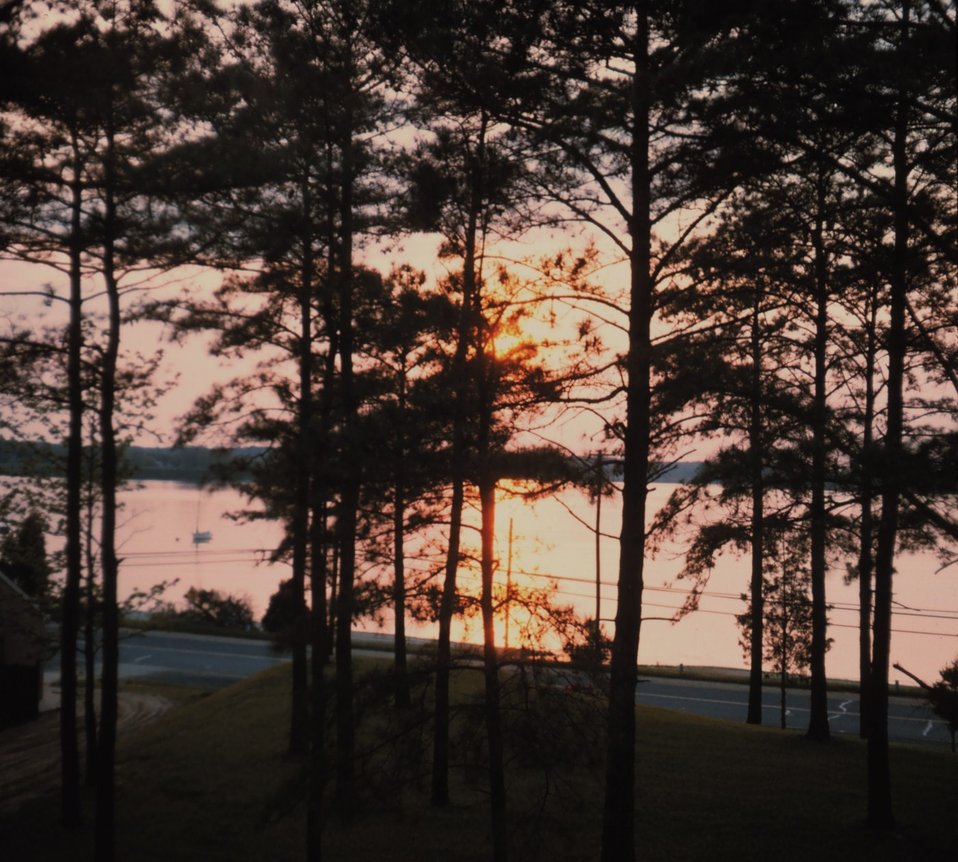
Overlooking the St. Mary's River from the campus of St. Mary's College of Maryland.